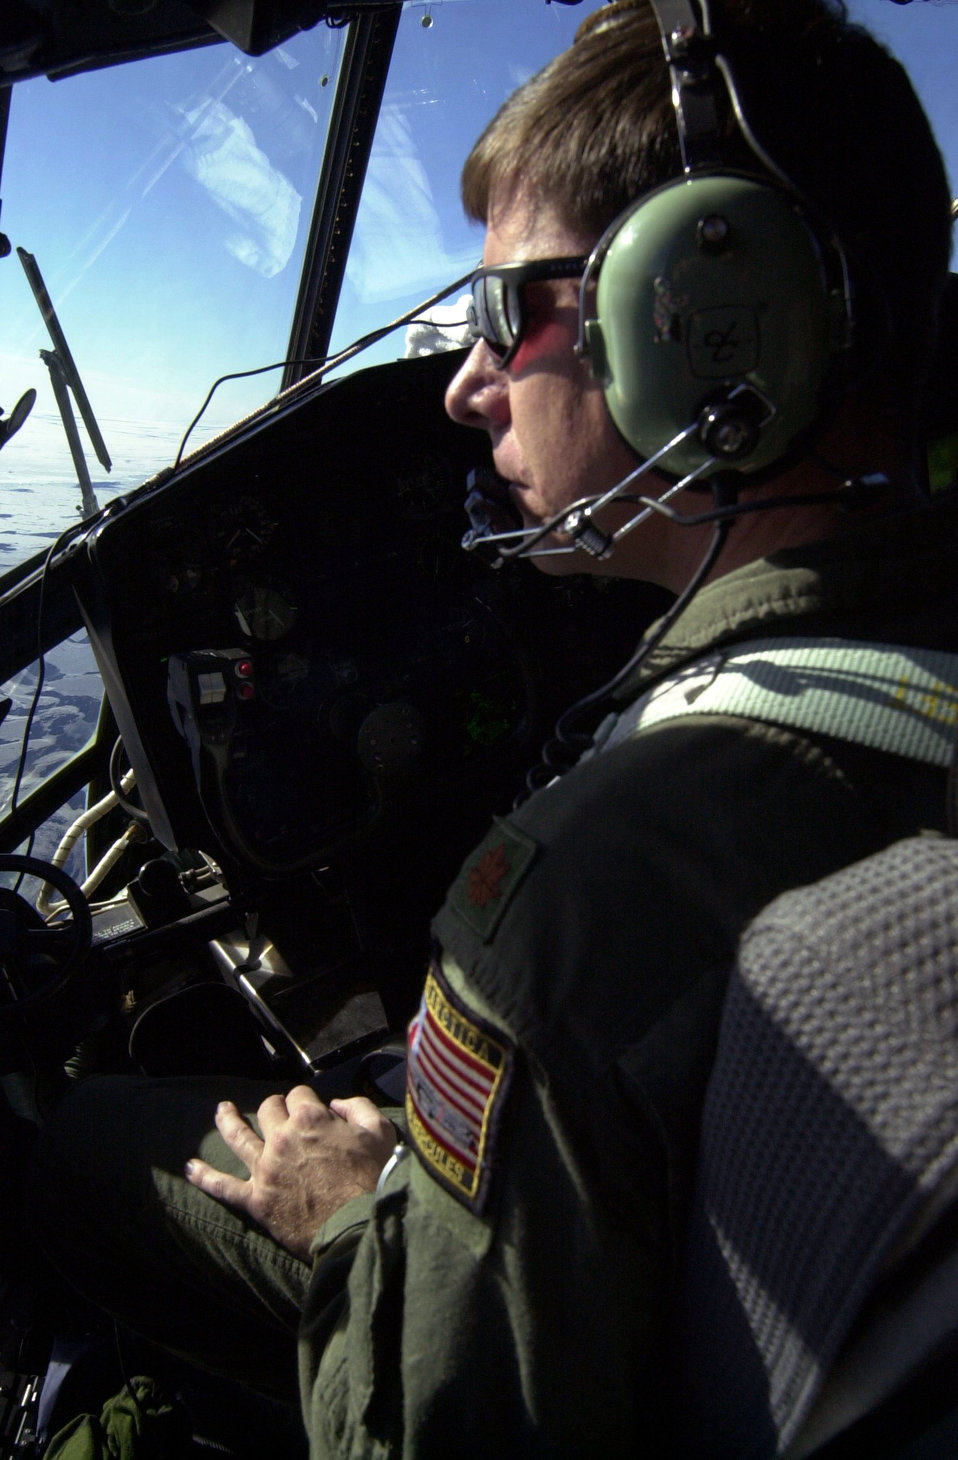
Air Guard retraces first flight to South Pole

OVER ANTARCTICA -- Maj. Mark Doll, a pilot with the New York Air National Guard's 109th Airlift Wing, looks out the window of an LC-130 Hercules over the area of Antarctica where Rear Adm. Richard E. Byrd established the Little America campsite 75 years ago. The edge of the Ross Ice Shelf and the sea ice in the area where Admiral Byrd established Little America broke off and floated away years ago. Major Doll and his crew took the long way to the pole to retrace the route of the first South Pole flight by Admiral Byrd.